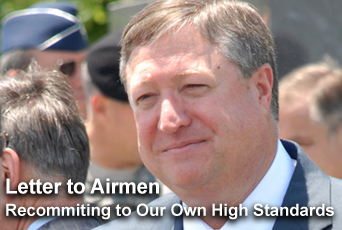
'Letter to Airmen' recommits to high standards 'Letter to Airmen' recommits to high standards

In his first Letter to Airmen, acting Secretary of the Air Force Michael B. Donley emphasizes the Air Force recommitment to high standards.